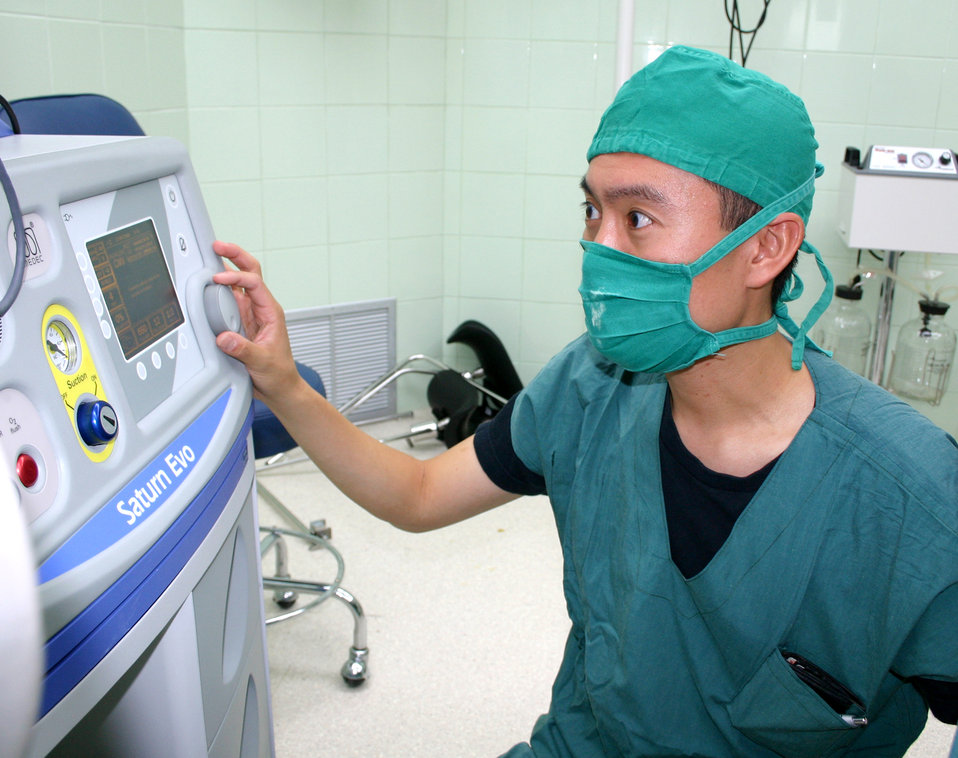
Medical team conducts mission in Ecuador

Capt. (Dr.) Jason Lee checks the functionality of an anesthesia machine in Esmereldas, Ecuador. Captain Lee is part of a Medical Readiness Training Exercise team that is performing cleft lip and cleft palate surgery on children of the region. He is an anesthesiologist with the 81st Surgical Operations Squadron at Keesler Air Force Base, Miss.